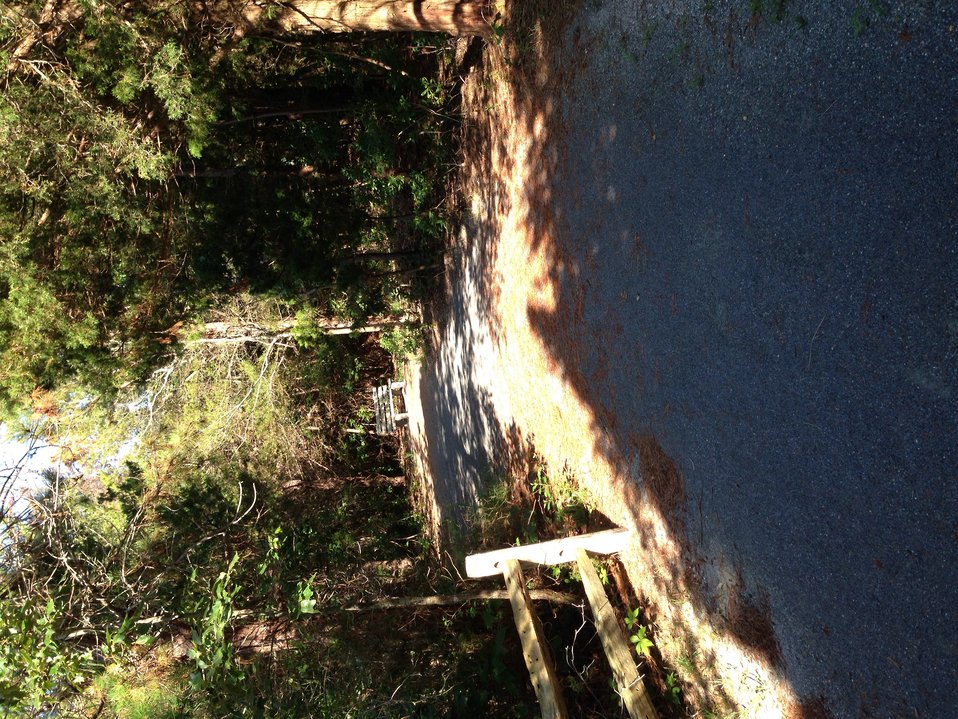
Forsythe wildlife drive after hurricane repairs

Leed's Eco-trail